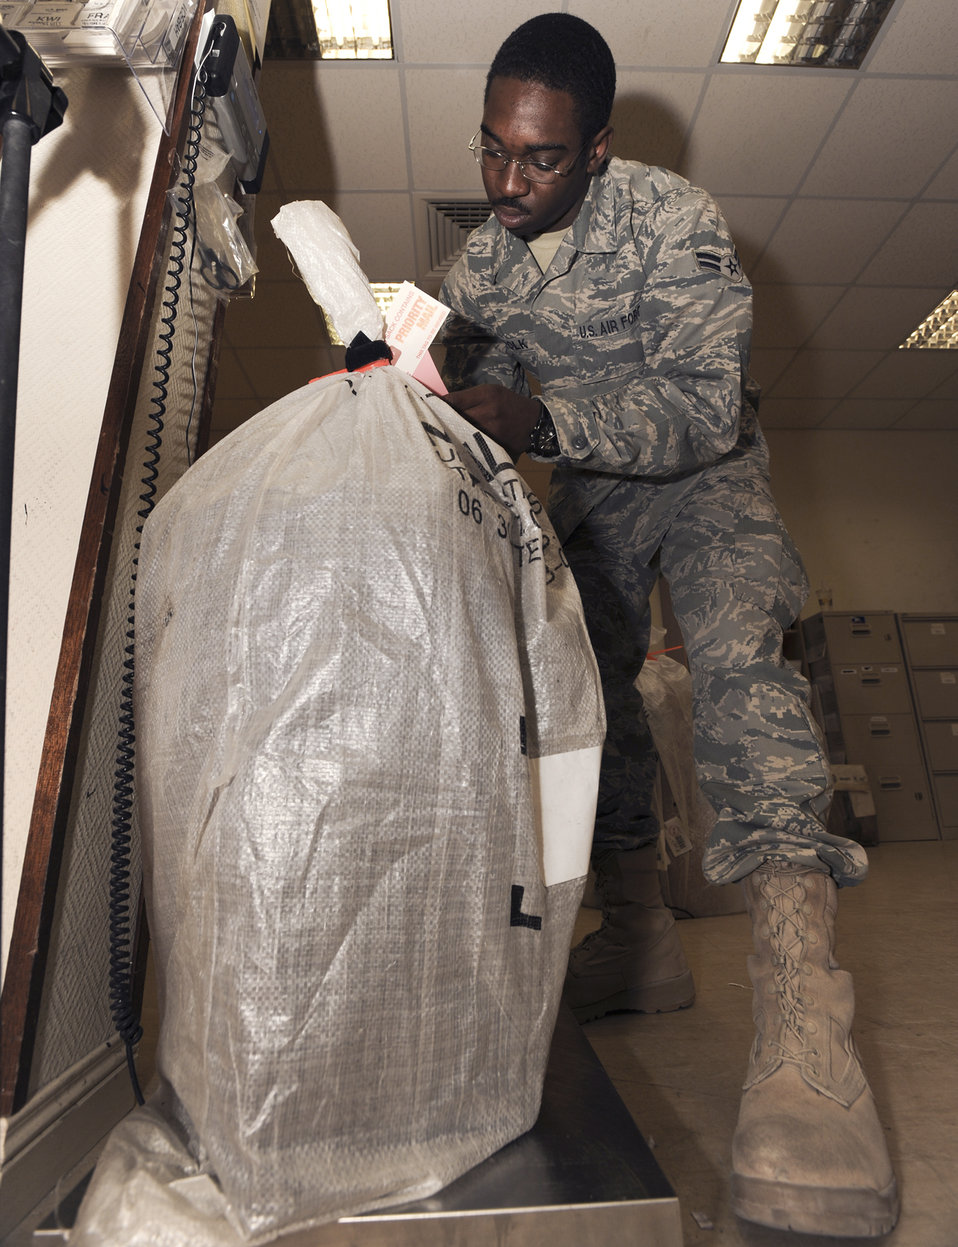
Postal workers deliver pieces of home through mail

Airman 1st Class Cardell Polk weighs a package at the coalition compound post office April 20 at an air base in Southwest Asia. Airman Polk is native to New Orleans and is deployed from Pope Air Force Base, N.C. He is a postal clerk with the 379th Expeditionary Communication Squadron.